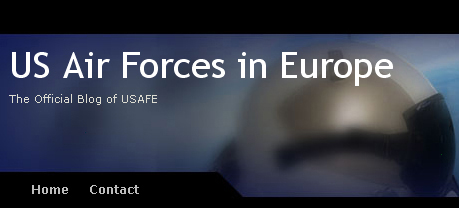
U.S. Air Forces in Europe blog now open to Airmen